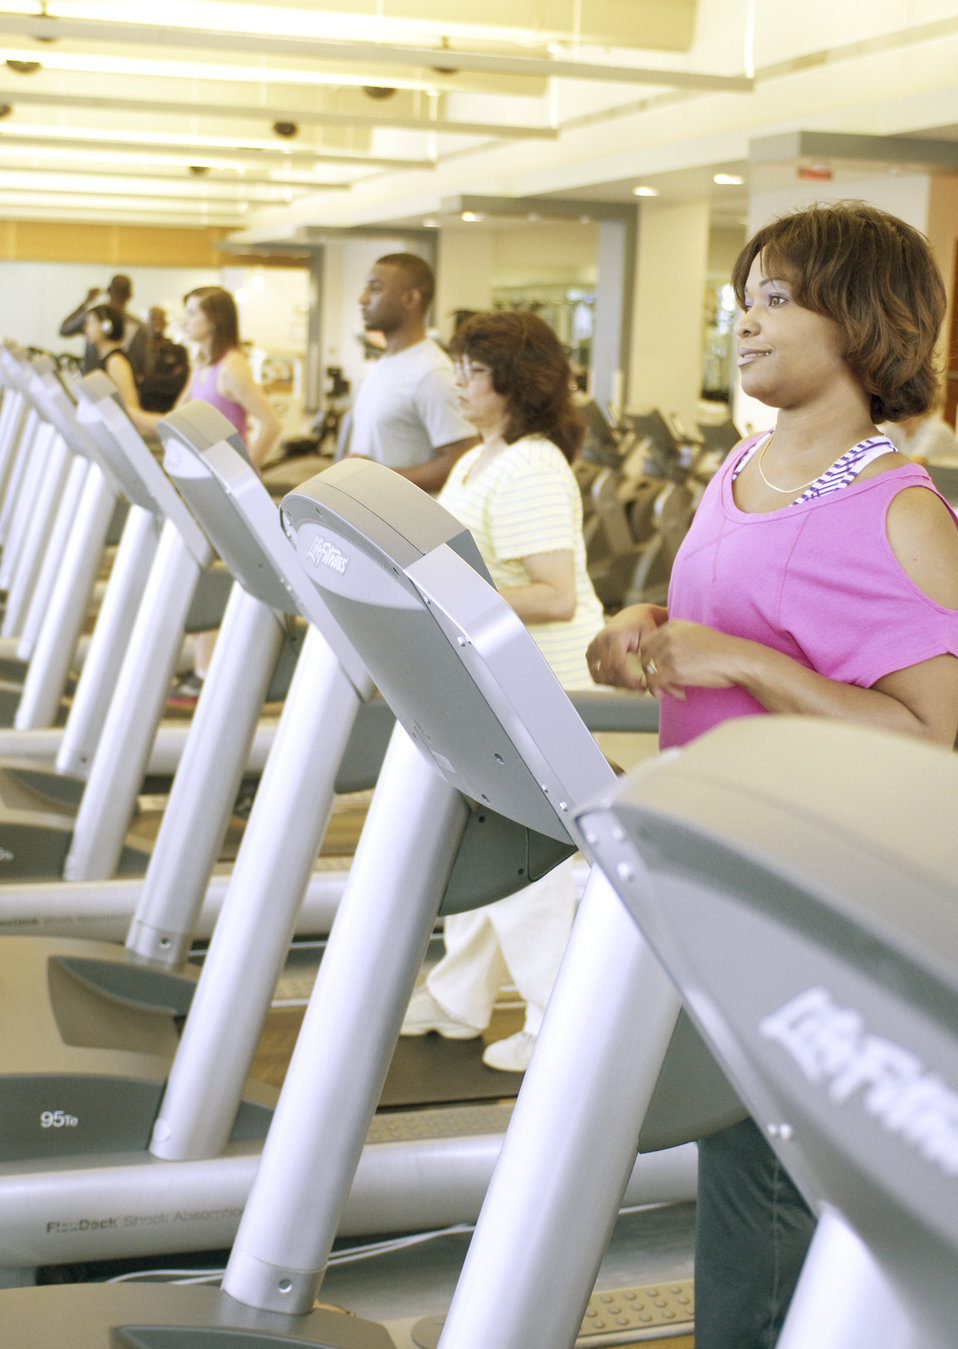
This image was captured on one of the Centers for Disease Control's (CDC) campuses, in the facility's fitness center, where a number of scheduled group classes are provided for employees' health and enjoyment. In this particular view, a number of fitness attendees were making use of the treadmills, taking part in some aerobic exercise.